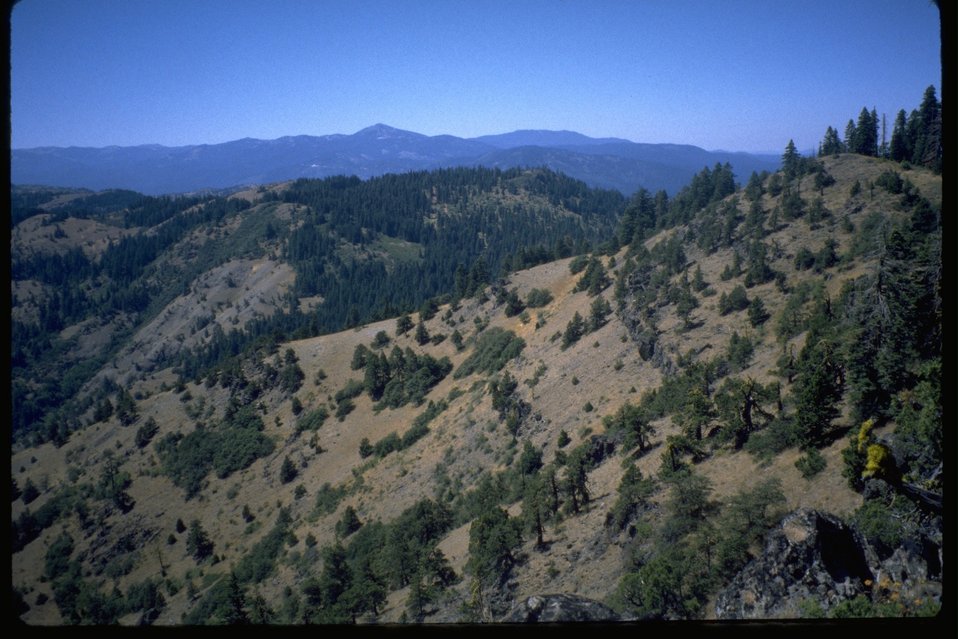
Soda Mountain view west from Boccard Point.